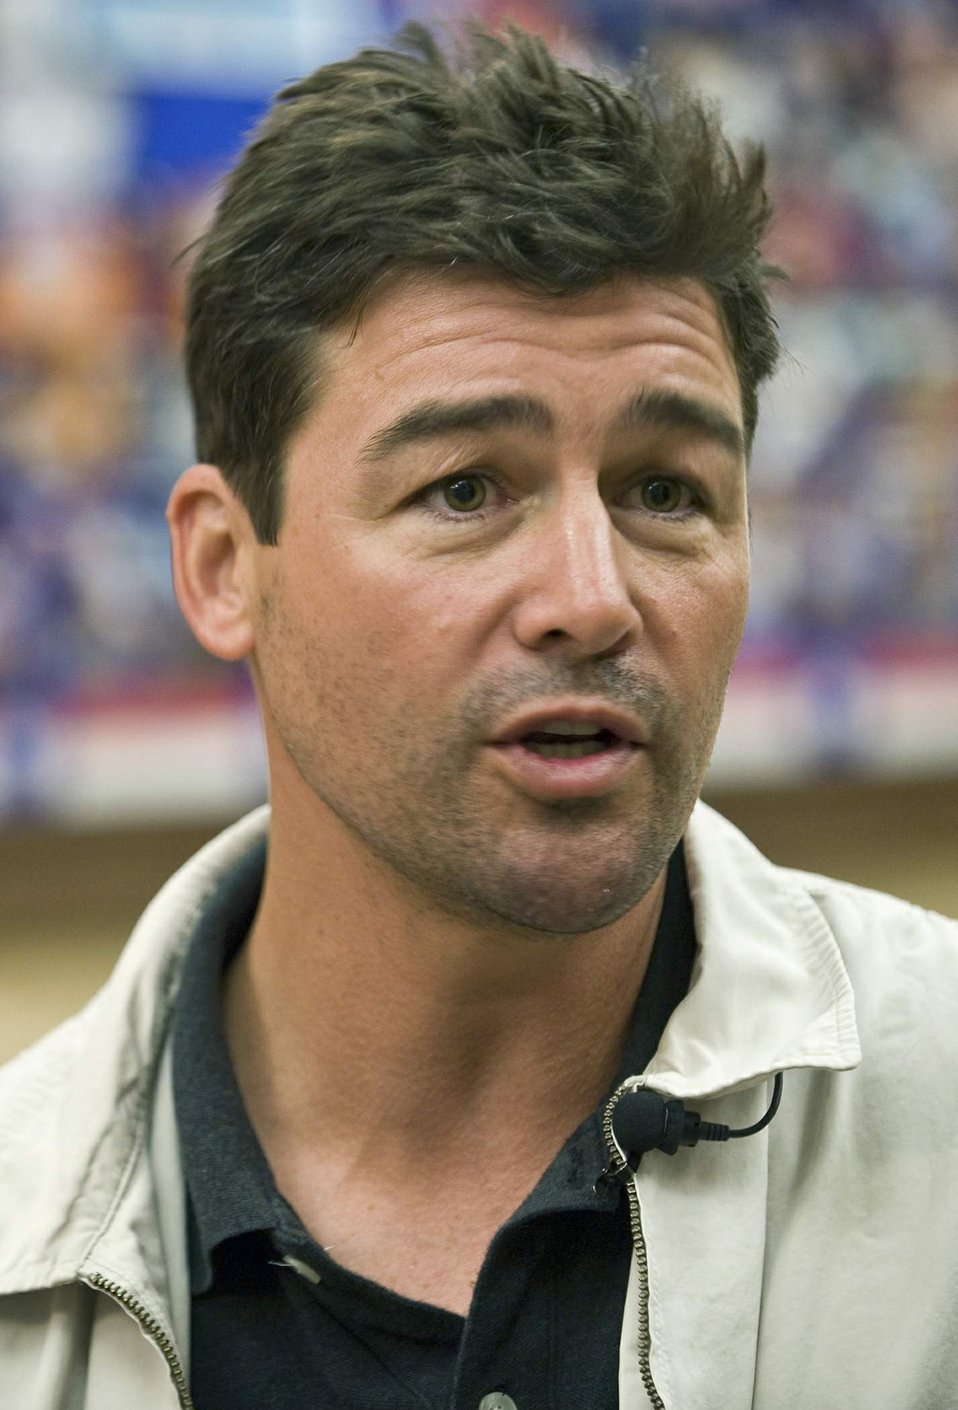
'Friday Night Lights' actors thank wounded warriors